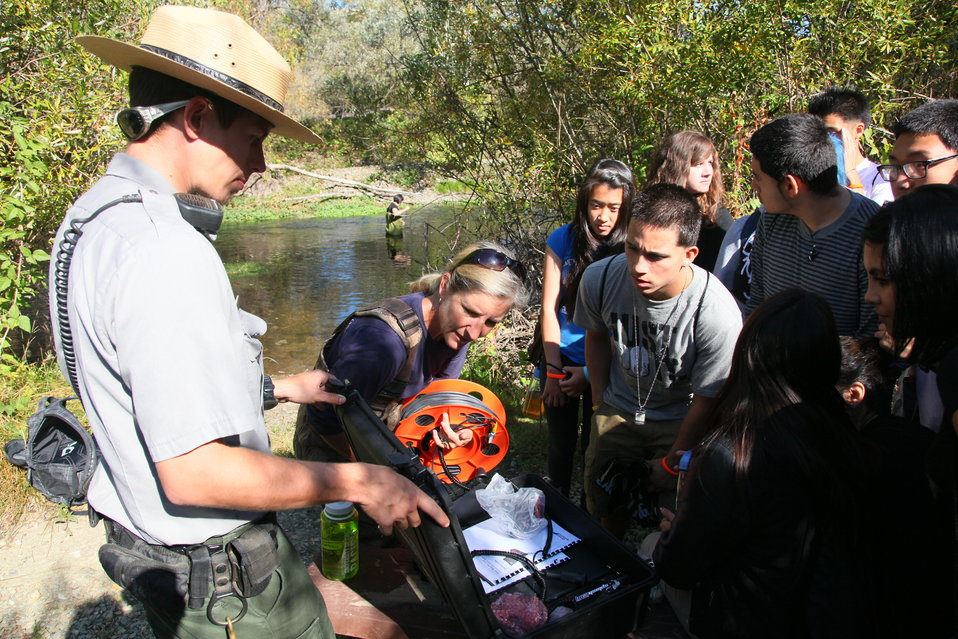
A river full of education

Park ranger Kevin Stewart (left), with the U. S. Army Corps of Engineers Sacramento District, assists Kari Burr (center), a fishery biologist with the Fishery Foundation, with a video monitor displaying underwater fish habitats to students along the Calaveras River below New Hogan Dam, Valley Springs, Calif., Oct. 22, 2011. The students, from Stagg and Bear Creek high schools of Stockton, Calif., experienced real life learning through activities including water sampling, aquatic life samples, an underwater video camera and fish habitats as part of the Calaveras River Education and Appreciation Day. The U.S. Army Corps of Engineers Sacramento District helped host the event, in partnership with the U.S. Fish & Wildlife Service’s “Connecting People with Nature” program.